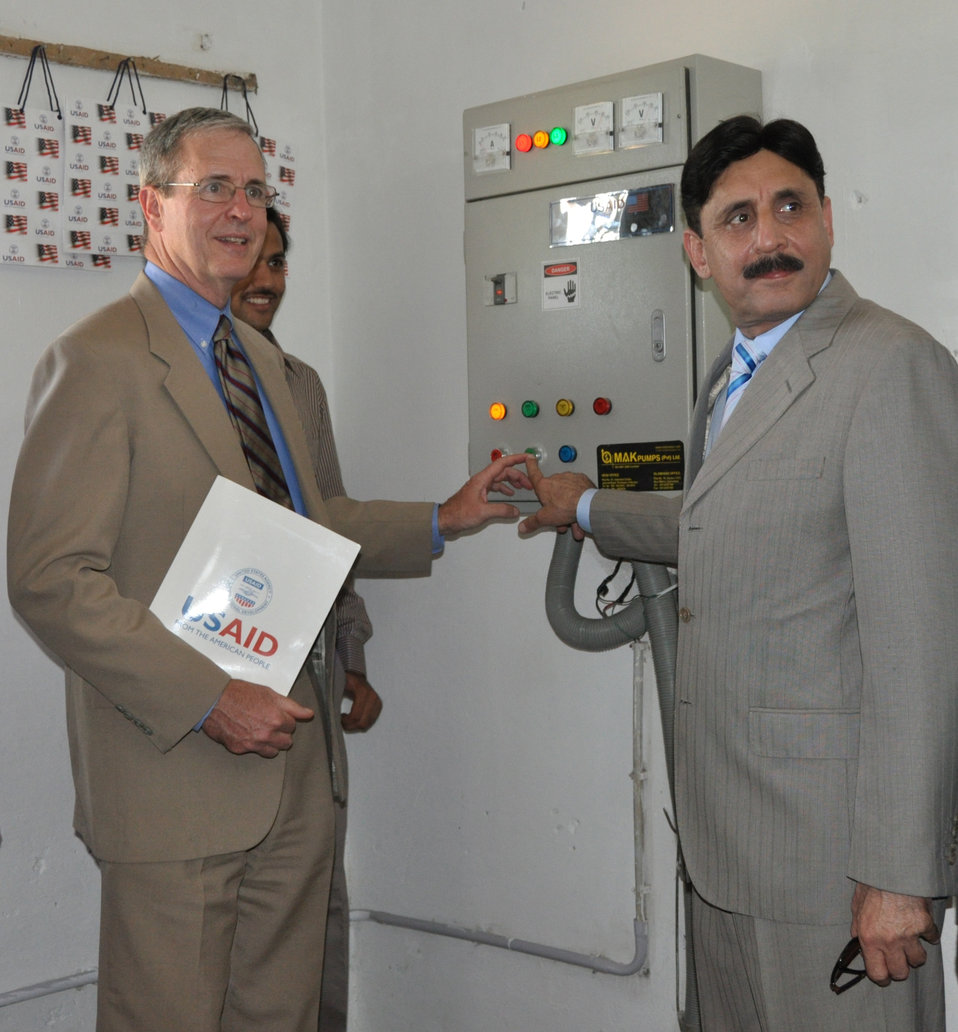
USAID funds replacement of 187 CDA Tubewell Pumps

Islamabad, July 17, 2012 - USAID Country Director Jonathan M. Conly and CDA Chairman Farkhand start the operation of a new USAID-funded energy efficient tubewell pump installed at Fatima Jinnah Park in Islamabad. USAID will replace all 187 tubewell pumps owned by the Capital Development Authority (CDA) in order to improve water supply for Islamabad, reduce energy consumption, and decrease the electricity bills for CDA.